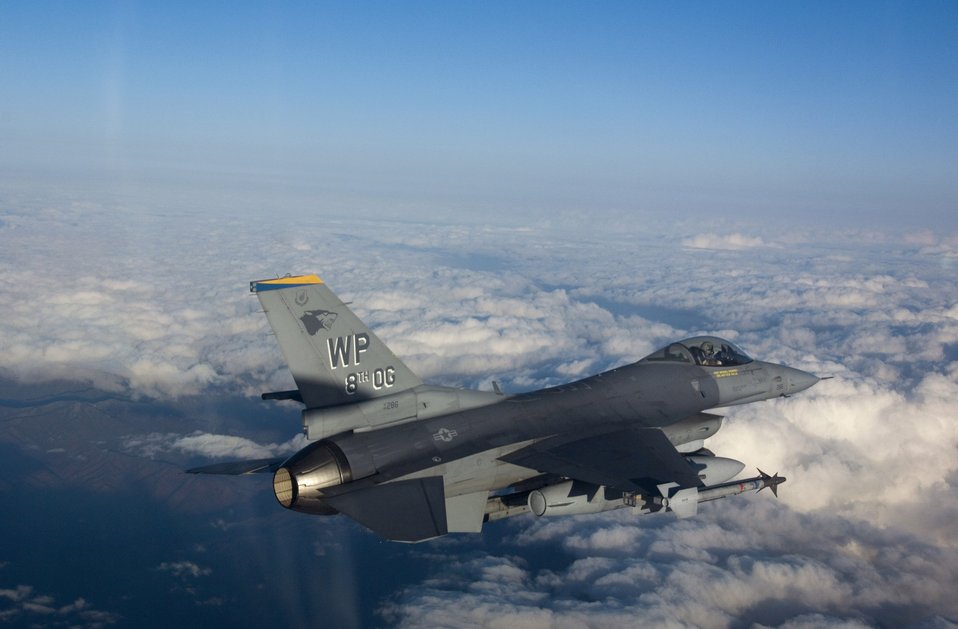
Close Air Support

KUNSAN AIR BASE, South Korea-- Capt. Joshua King, a pilot assigned to the 80th Fighter Squadron, flies his F-16 Fighting Falcon back to base after completing a close-air-support training mission Nov. 29, 2007. Pilots utilize training missions to simulate actual conditions they may face in combat and keep their war-fighting skills honed.